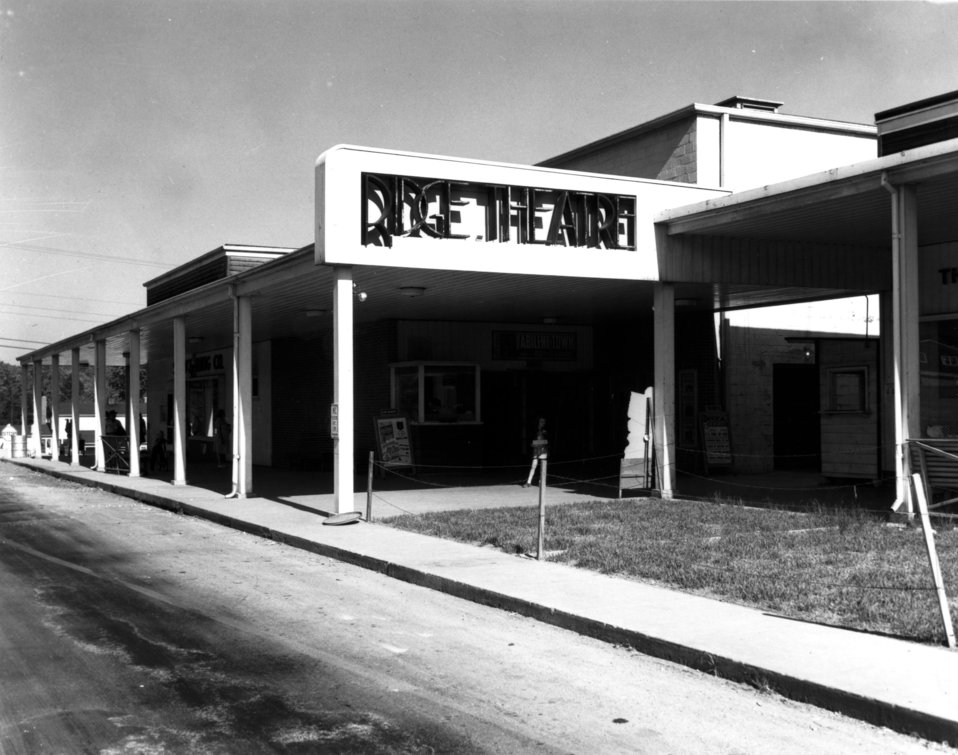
Business activity at Oak Ridge